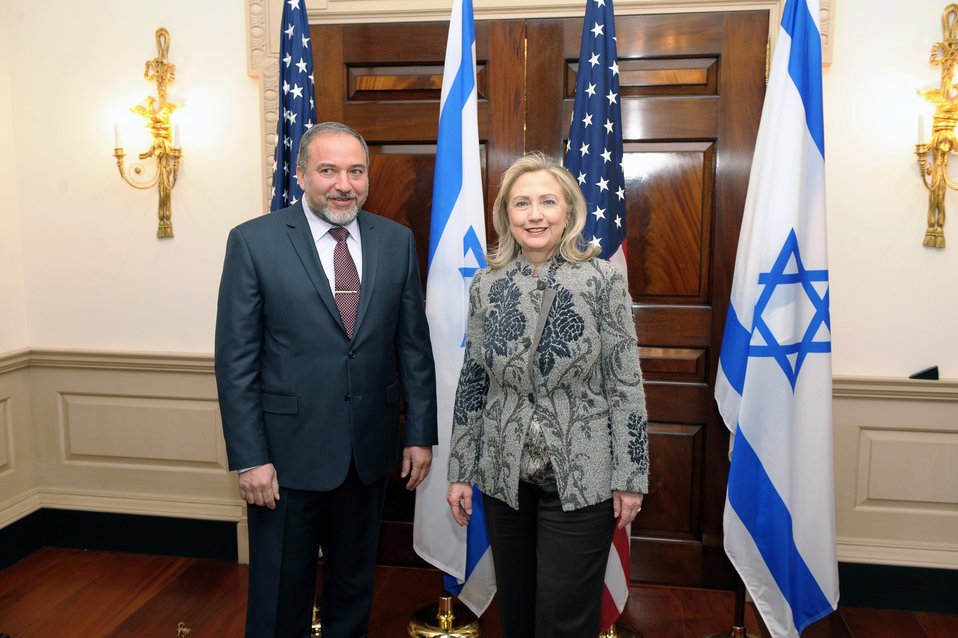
Secretary Clinton Meets With Israeli Deputy Prime Minister and Foreign Minister Liberman

U.S. Secretary of State Hillary Rodham Clinton poses for a photo with Israeli Deputy Prime Minister and Foreign Minister Avigdor Liberman before their bilateral meeting at the U.S. Department of State in Washington, D.C., on February 7, 2012.